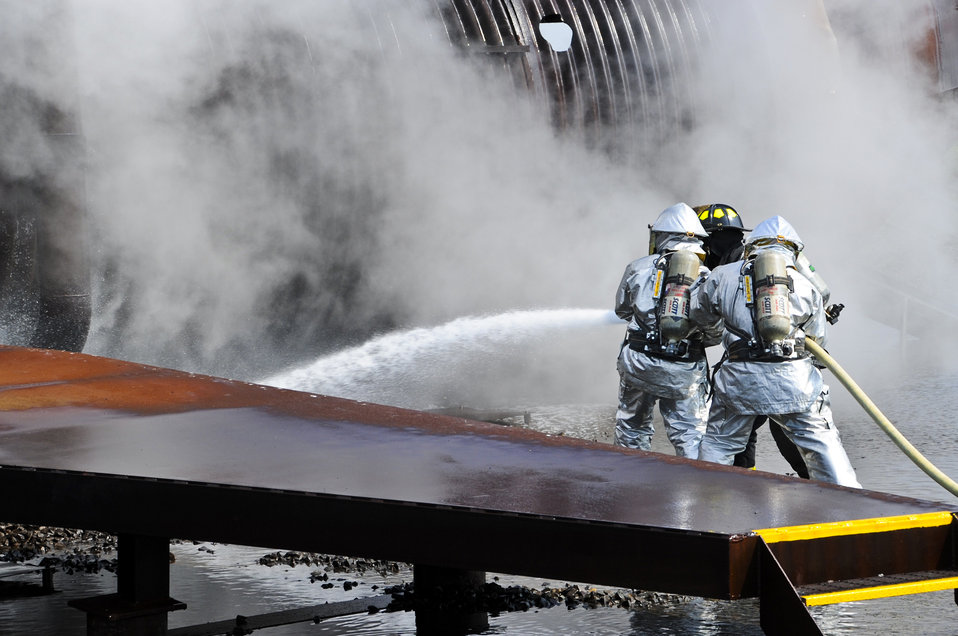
Firefighter training

Airmen and Marines battle a fire near the rear of a mock aircraft June 10, 2011, during a joint firefighting course at Joint Base McGuire-Dix-Lakehurst, N.J.